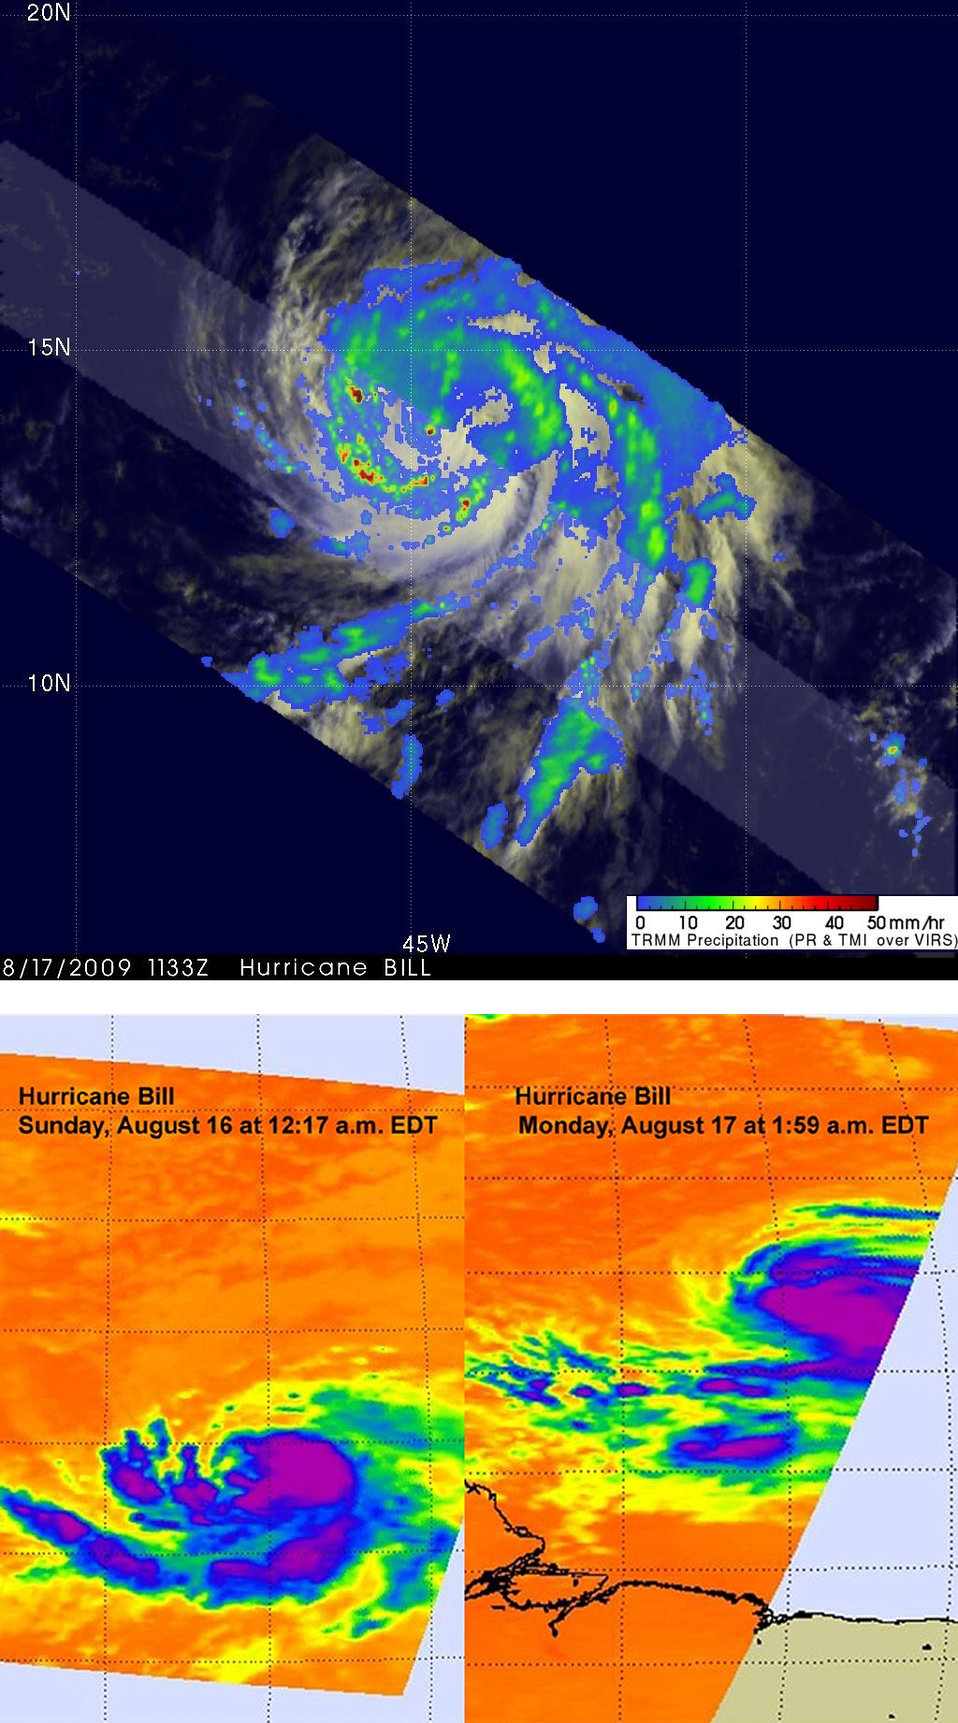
August 17, 2009 - Two NASA Satellites Capture Hurricane Bill's "Baby Pictures"